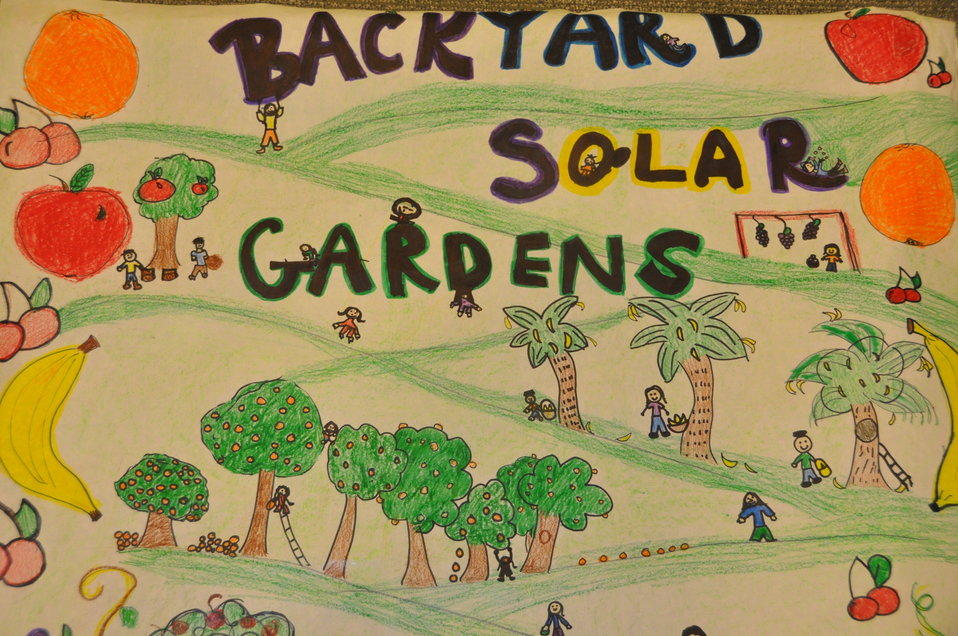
Classroom project, Grade 5, Rhode Island